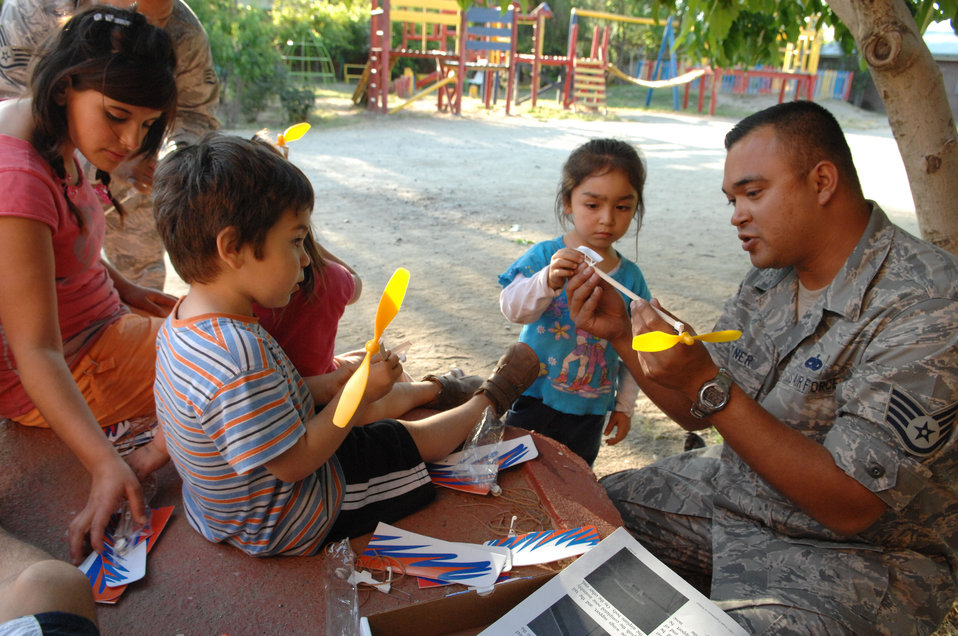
Airmen continue building South American partnerships

Staff Sgt. Lee Fortner, an aircraft maintainer from the 355th Maintenance Group at Davis Monthan Air Force Base, Ariz., demonstrates how to build a model airplane to orphans at a Santiago, Chile orphanage on Oct. 30. Sergeant Fortner is one of about 70 Airmen spread across four South American countries learning and sharing with their partner nations' military members and performing community outreach events as part of Operation Southern Partner -- a Twelfth Air Force (Air Forces Southern) led event aimed at providing intensive, periodic subject-matter exchanges in the U.S. Southern Command area of focus.